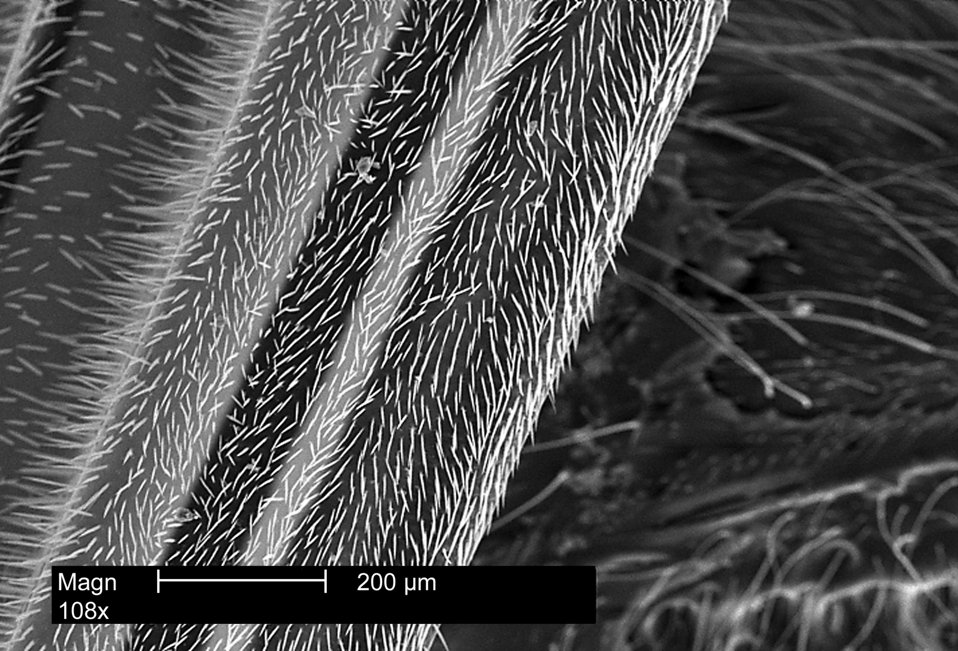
An electron micrograph of a wasp's leg appendage revealing small, highly sensitive hairs on its surface magnified 108x.